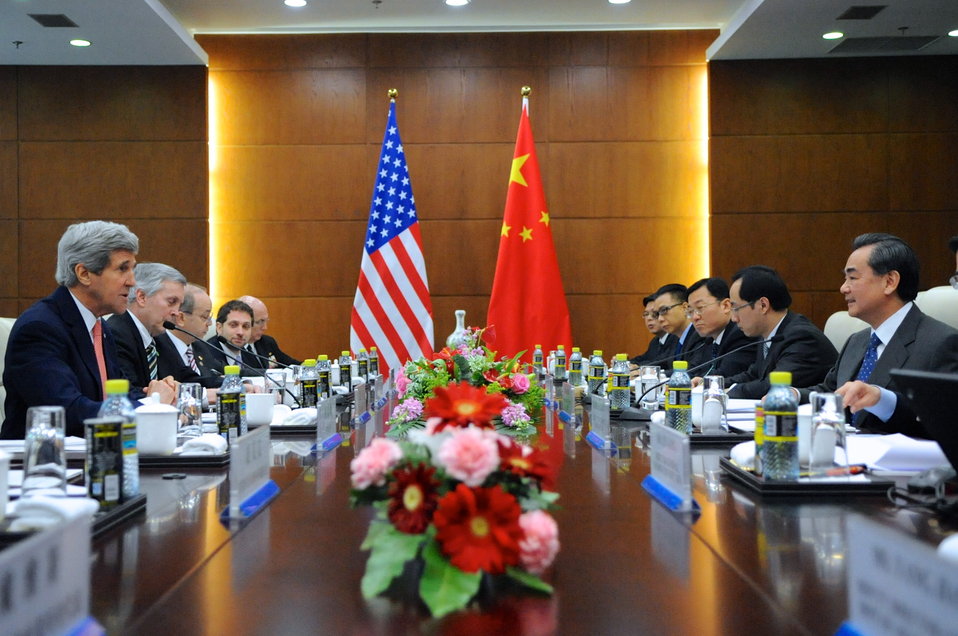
Secretary Kerry Meets With Chinese Foreign Minister Wang

U.S. Secretary of State John Kerry and Chinese Foreign Minister Wang Yi sit across from one another at a meeting at the Ministry of Foreign Affairs in Beijing, China on February 14, 2014.